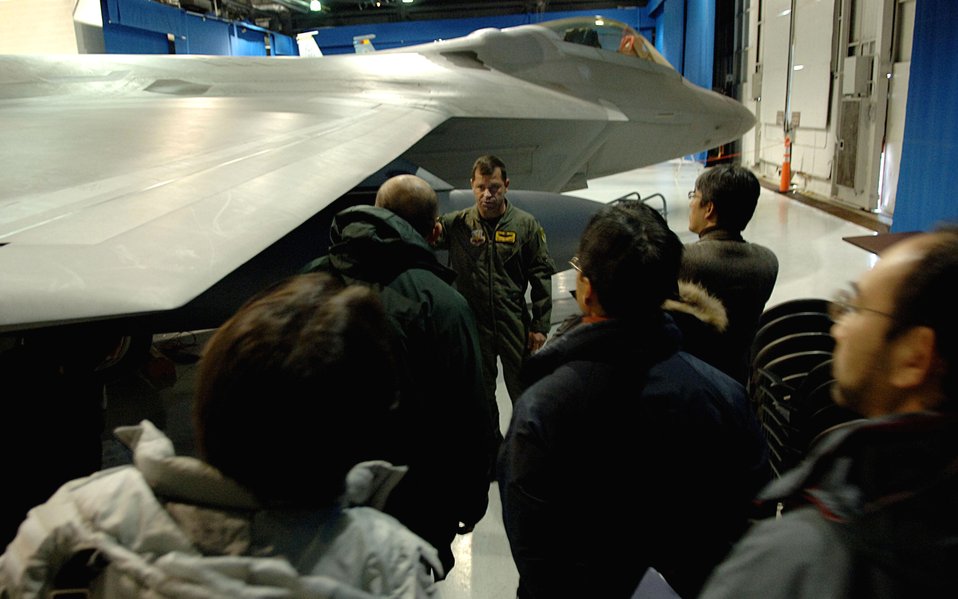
Raptor showcased for Japanese

Lt. Col. Wade Tolliver explains F-22 Raptor capabilities to Japanese media during a press conference Jan. 31 with F-22 maintainers and pilots who will be deploying to Kadena Air Base later this month. The deployment to the Pacific Air Forces installation is the first real world deployment for the 27th Fighter Squadron with the Raptor. Colonel Tolliver is the squadron commander.